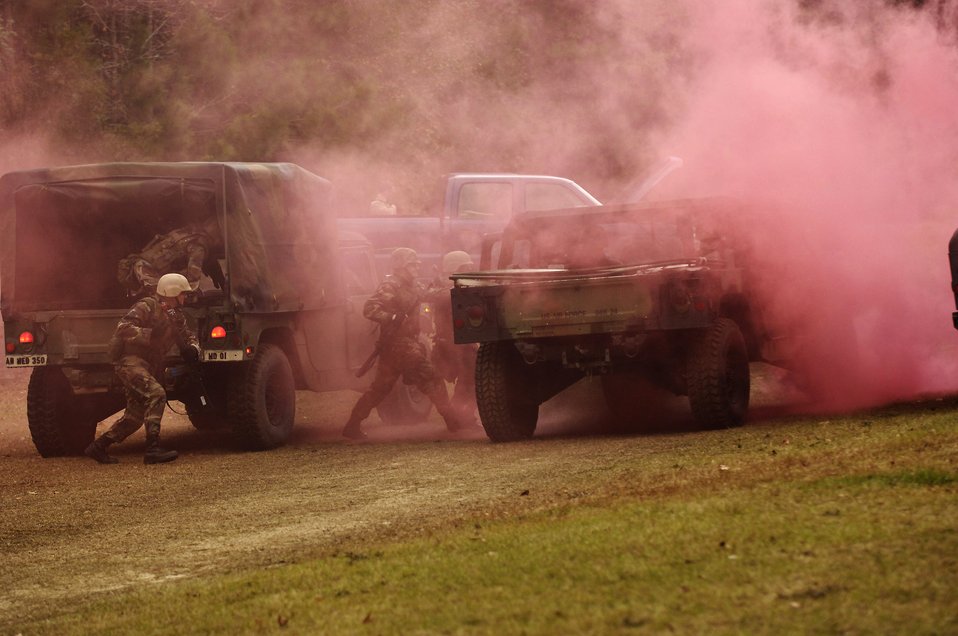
Testing their skills

Members of the 437th Airlift Wing cross load through smoke after a vehicle in their convoy was struck by a simulated improvised explosive device during the Expeditionary Combat Skills Training Dec. 7 at Charleston Air Force Base, S.C. The ECST is a three-day tactical operations course to prepare Charleston Airmen for future deployments.